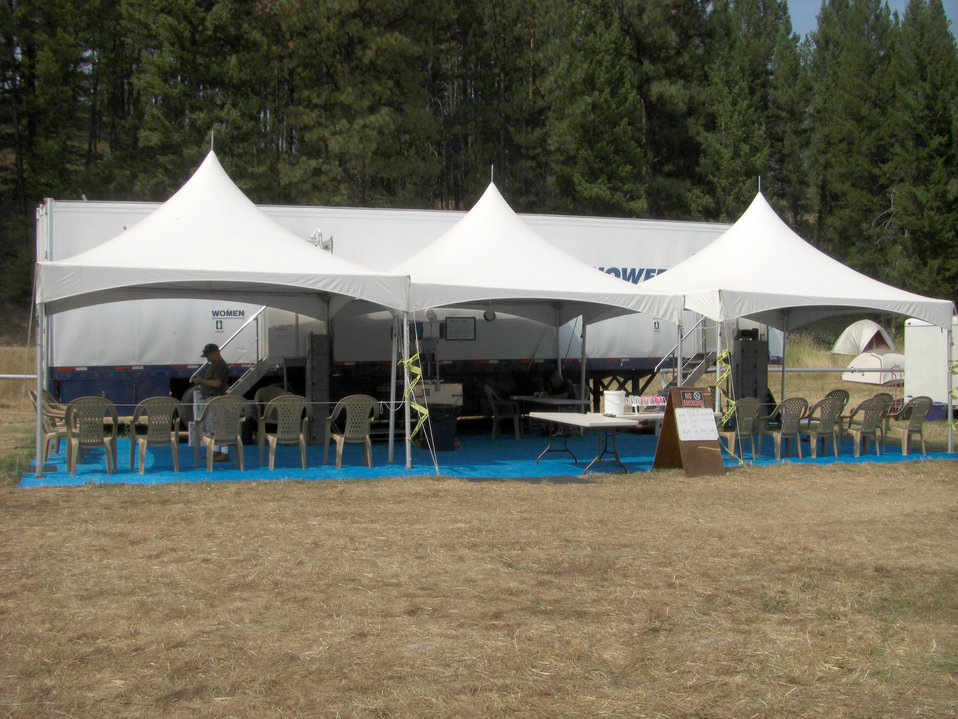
Shower units are provided to fire crews at the Gold Pan Fire Incident Command Post. The Gold Pan Fire in the Bitterroot National Forest near Conner, MT began by lightning on Jul. 16, 2013 by lighting have consumed approximately 39,927 acres.